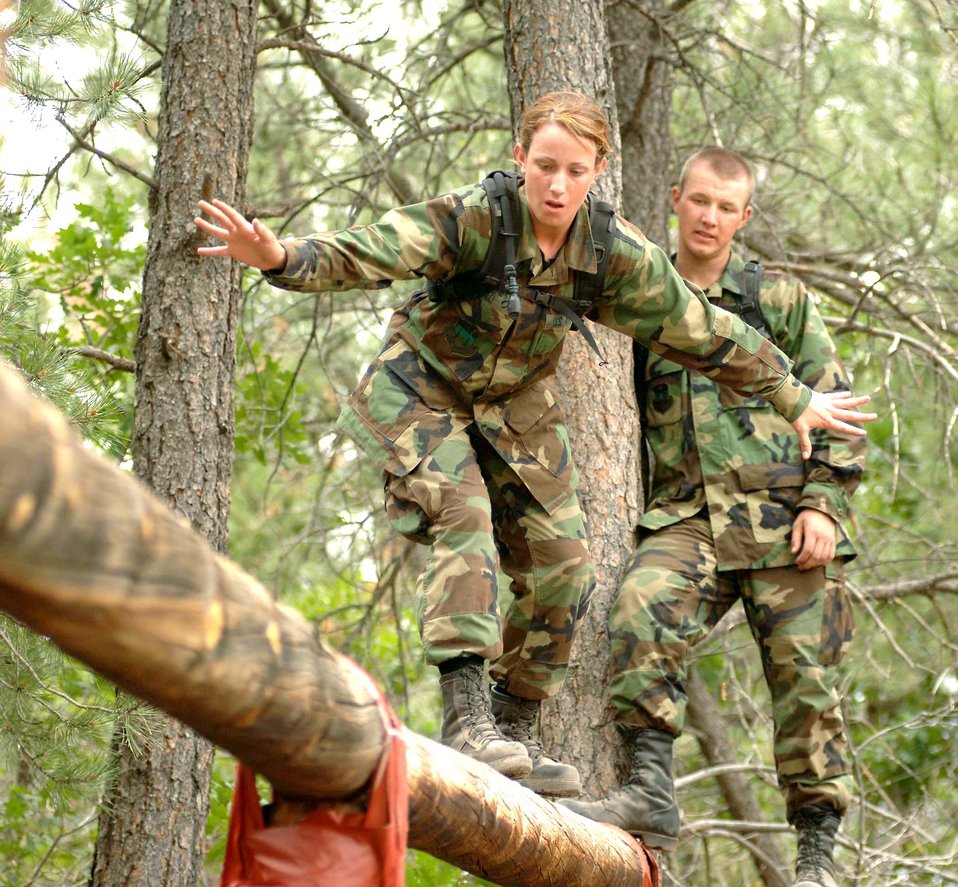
Basic cadets focus on next training obstacle

U.S. AIR FORCE ACADEMY, Colo. -- A basic cadet concentrates on keeping her balance while a fellow cadet waits his turn to tackle the balance beam.